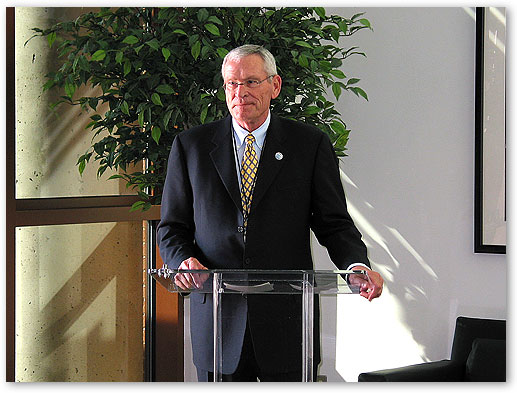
AT&T Chairman and CEO Mr. Ed Whitacre at IP-Video Technology Demonstration in Irving, Texas.